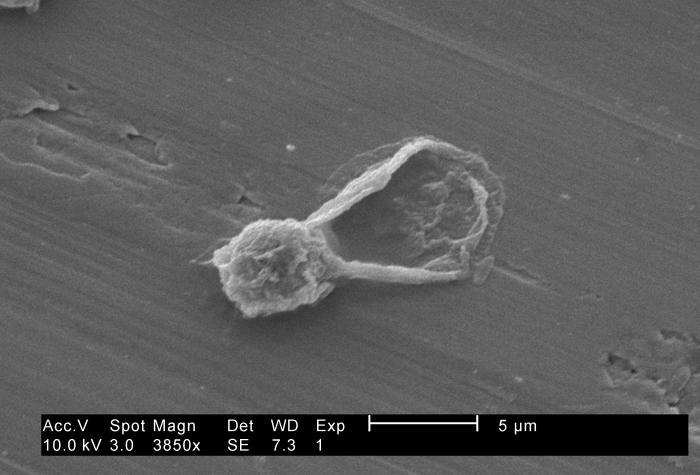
Under a high magnification of 3850X, this 2002 scanning electron micrograph (SEM) revealed some of the ultrastructural morphology exhibited by what is thought to be a single Hartmannella vermiformis amoeba cyst, and a debris artifact.